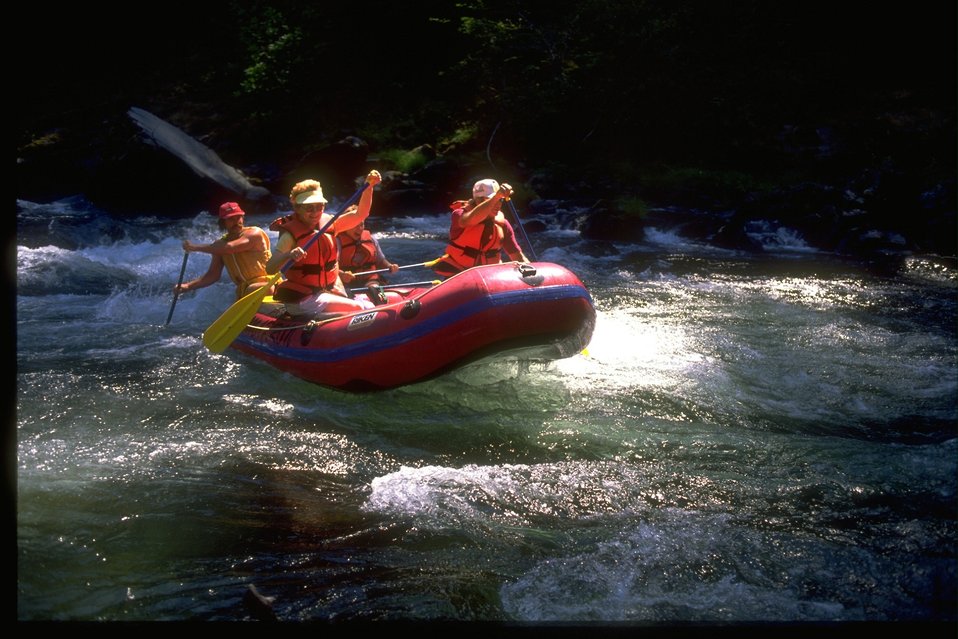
Rafting on the North Umpqua River.